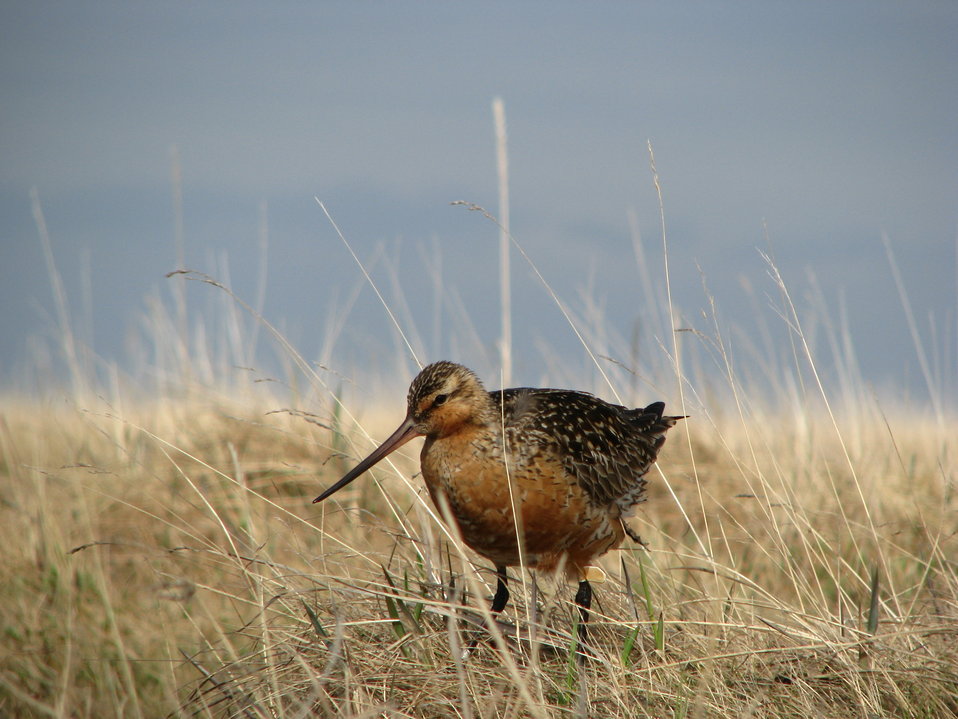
Bar-tailed Godwit

Yukon Delta NWR
This guy was banded and had a flag!!